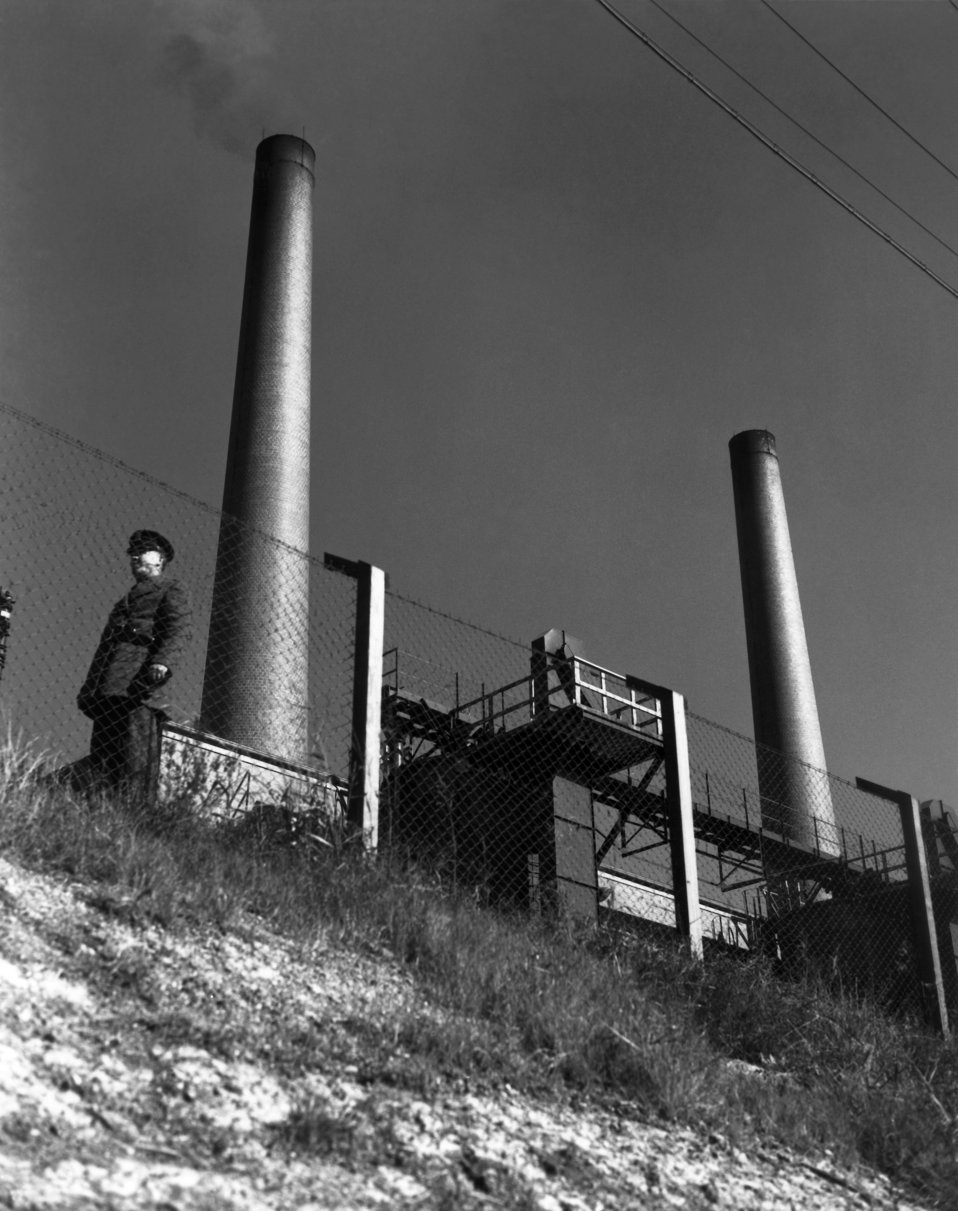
Security Guards on Duty Oak Ridge

Pro-2075 DOE photo by Ed Westcott Security Guards on Duty Oak Ridge Tennessee 1945